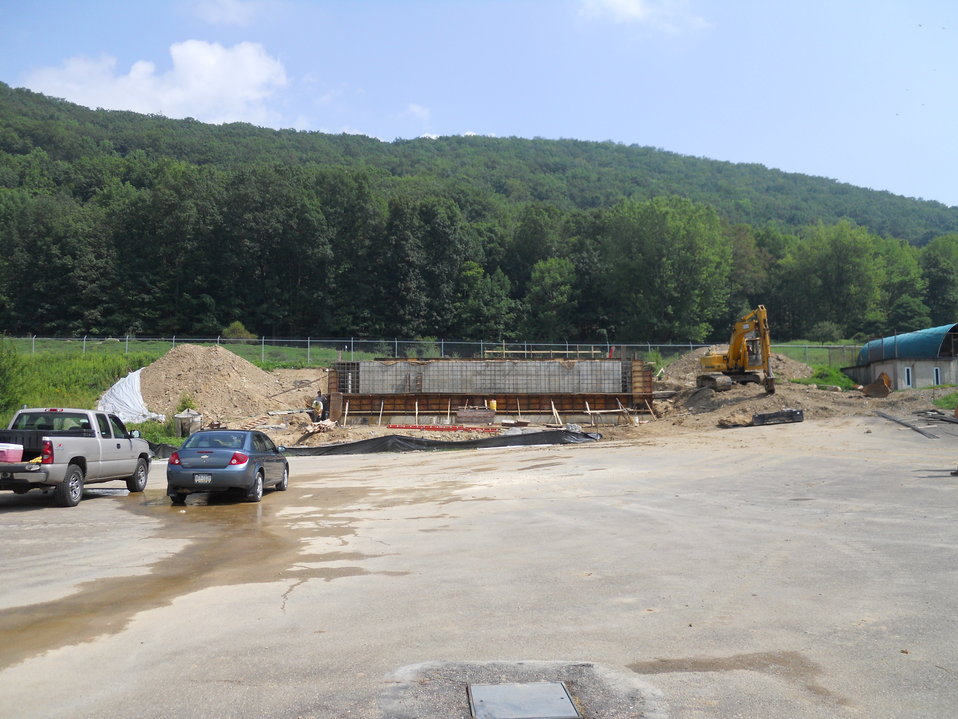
New degassing building under construction

William T. Spaeder Co., Inc., contracted to carry out the construction, is a small family-owned local company from Erie, Penn. It was established in 1919 by World War I Navy veteran William “Bill” Spaeder. Today, ten of Spaeder’s grandchildren work for the company, including company president Terry M. Spaeder.